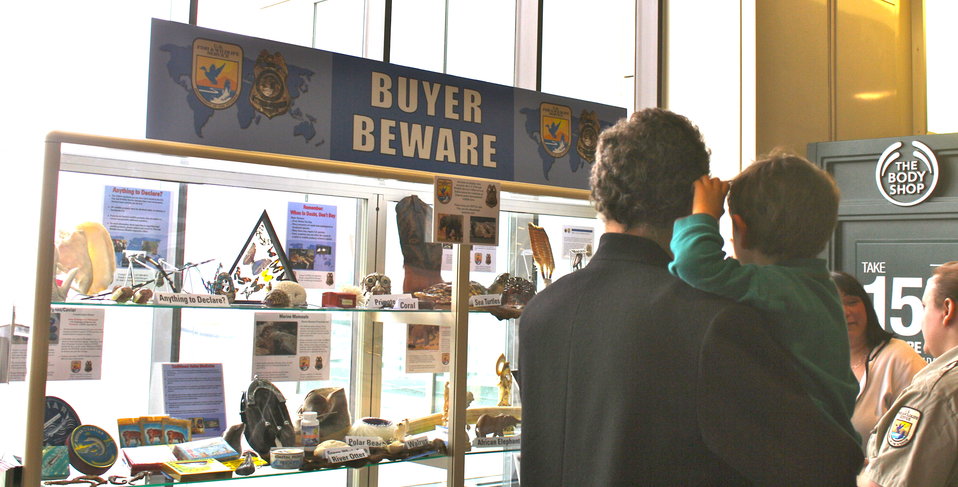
Man and Child at the Exhibit